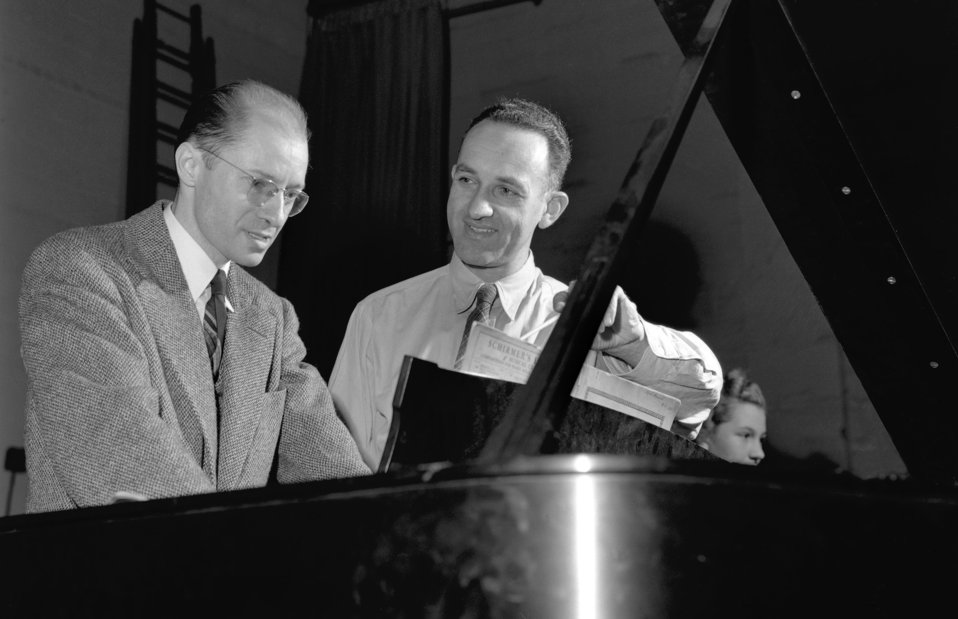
Prof. Albert Schmid and Dr. Waldo Cohn 1948 Oak Ridge

4228-34 DOE photo Ed Westcott 1-1948 Oak Ridge Tennessee